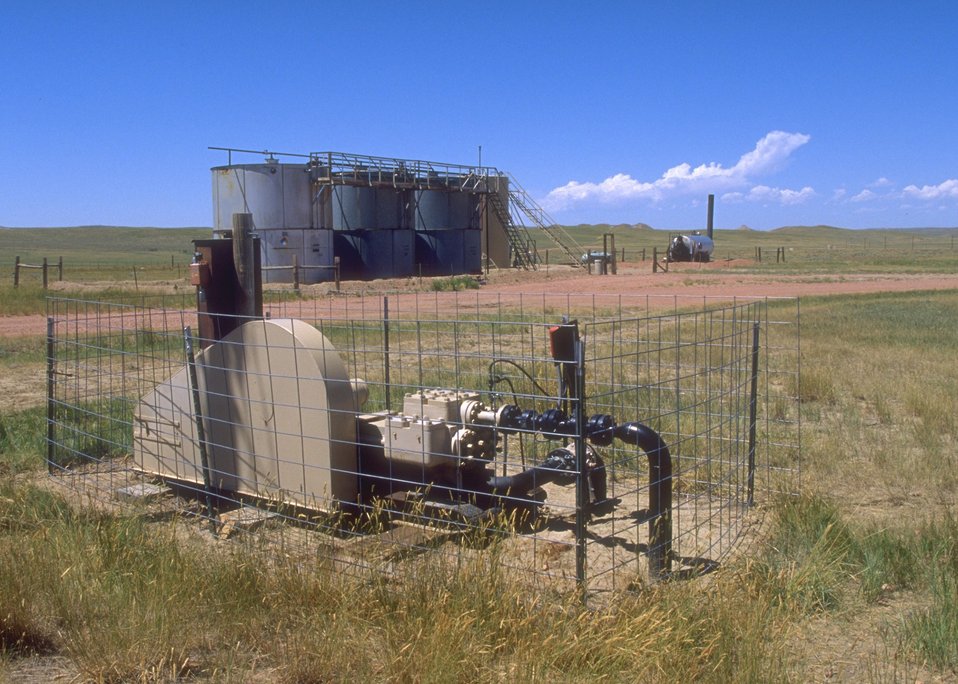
Drill site for coal bed methane, Buffalo Field Office.